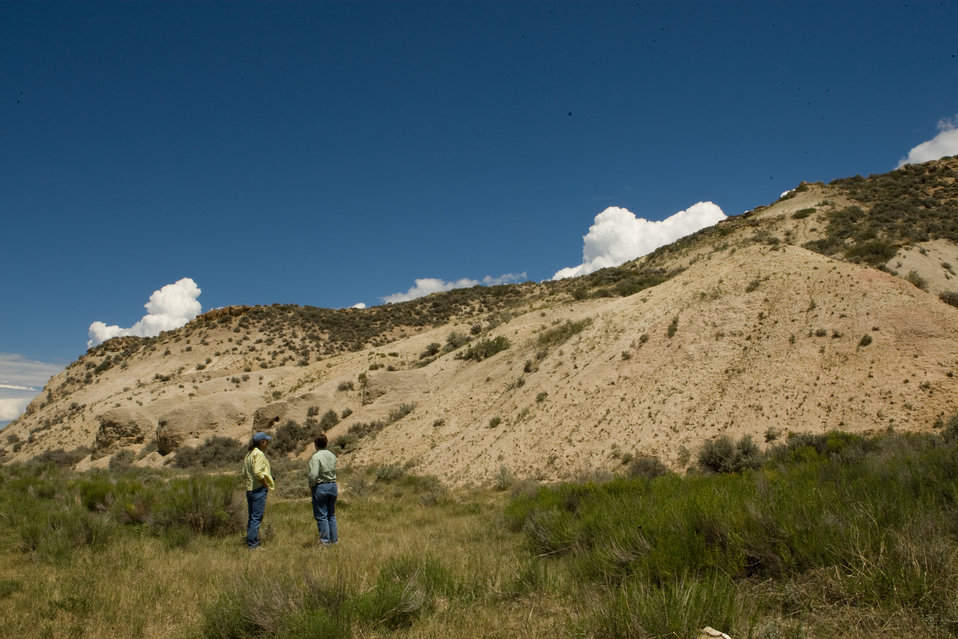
Colorado Rare Plant Conservation Initiative

The Colorado Rare Plant Conservation Initiative (RPCI) is a partnership of 23 statewide and regional agencies, private organizations, and academic institutions working to conserve 121 rare plants in Colorado. As part of these efforts the group developed the Colorado Rare Plant Conservation Strategy, developed Best Management Practices to reduce energy development impacts, addressed climate change, and developed focused strategies for the conservation of individual species at eight priority landscapes. The group has also worked to coordinate volunteer efforts for plant conservation across the state.